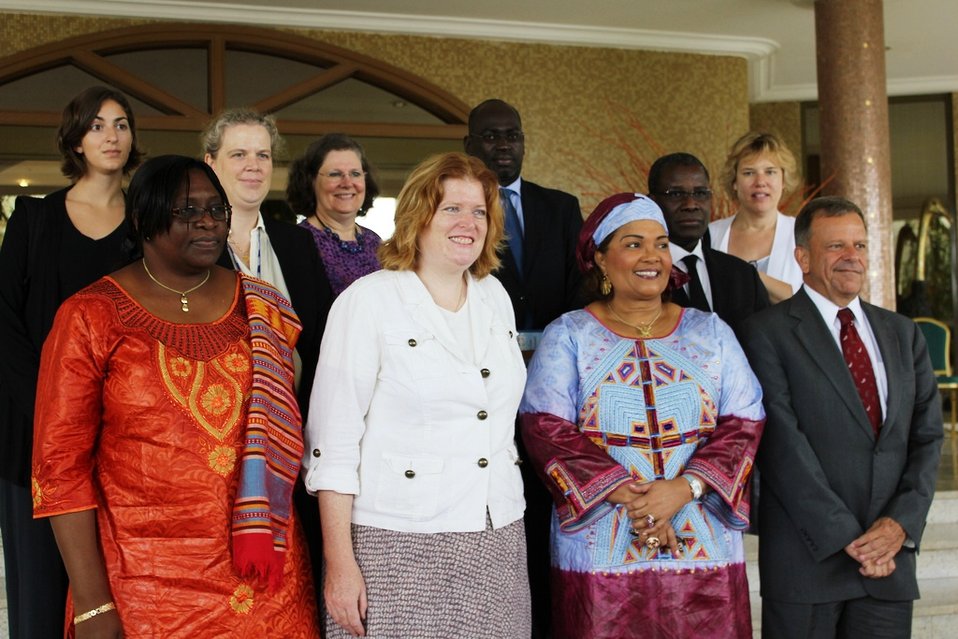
Assistant Secretary Richard Meets With First Lady of Burkina Faso Compaoré

Assistant Secretary Anne Richard meets with First Lady of Burkina Faso Chantal Campaoré, who is the Goodwill Ambassador of the Campaign for the Worldwide Ban of Female Genital Mutilation, to discuss family planning and refugees in Ouagadougou, Burkina Faso, on July 31, 2012.